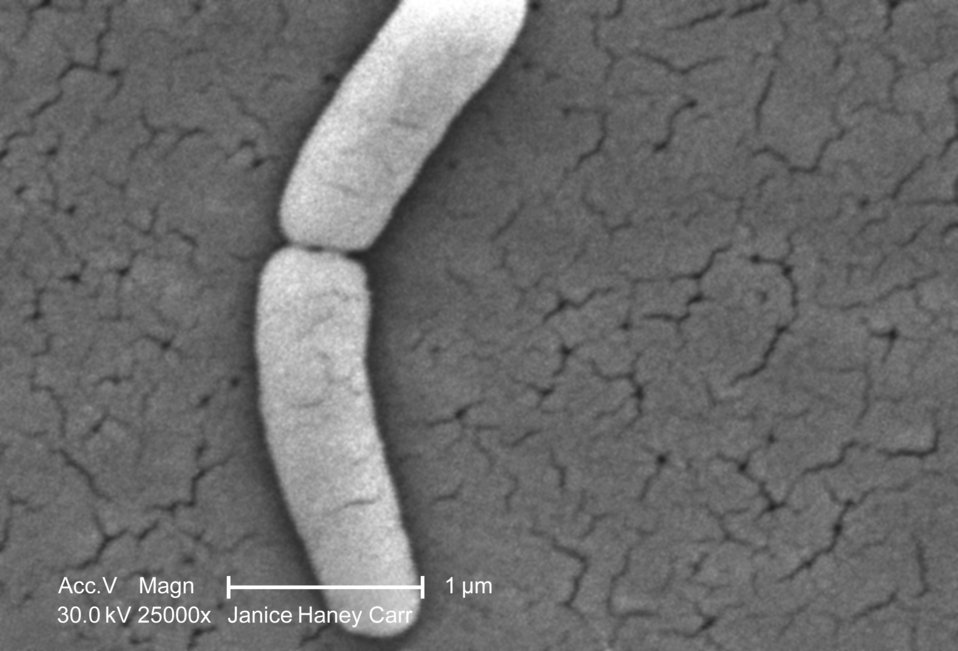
Under a very high magnification of 25000X, this scanning electron micrograph (SEM) revealed the presence of a single Gram-negative Salmonella typhimurium bacterium, which was imaged right at the point where it was undergoing the process of cell division, resulting in the formation of two separate organisms. This dividing bacterium had been isolated from a pure culture.